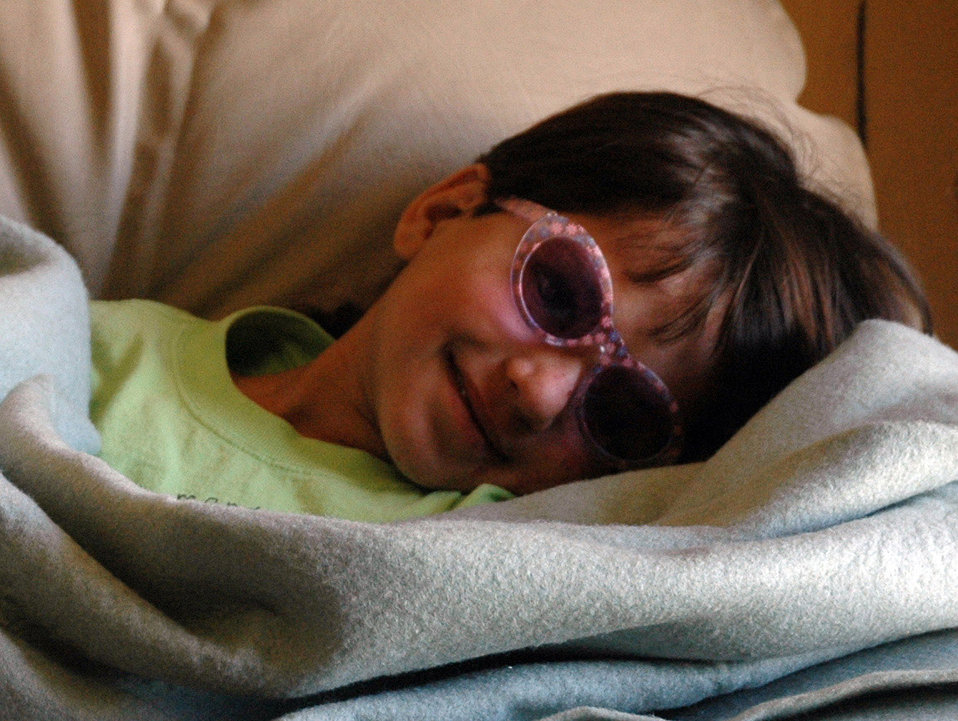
Coalition doctors remove tumor, save Afghan girl's life

Gulzana Haqim rests in her quarters after being released from the hospital following a successful surgery at Bagram Air Field, Afghanistan on July 11. The 6-year-old girl was treated by Coalition doctors at the Craig Joint Theater Hospital on Bagram.